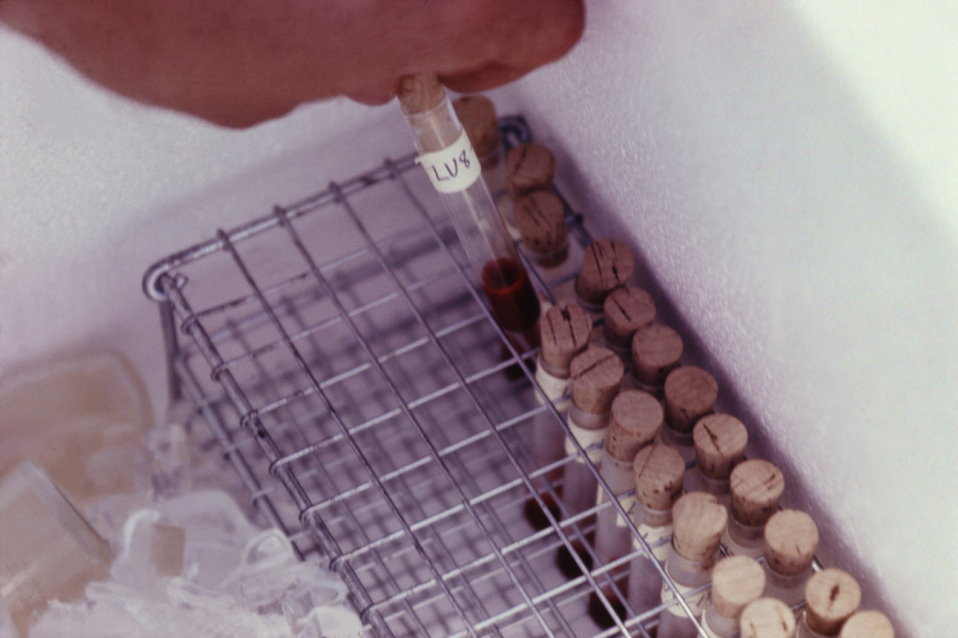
This technician is storing blood samples on wet ice so they may later be tested for the presence of arbovirus.